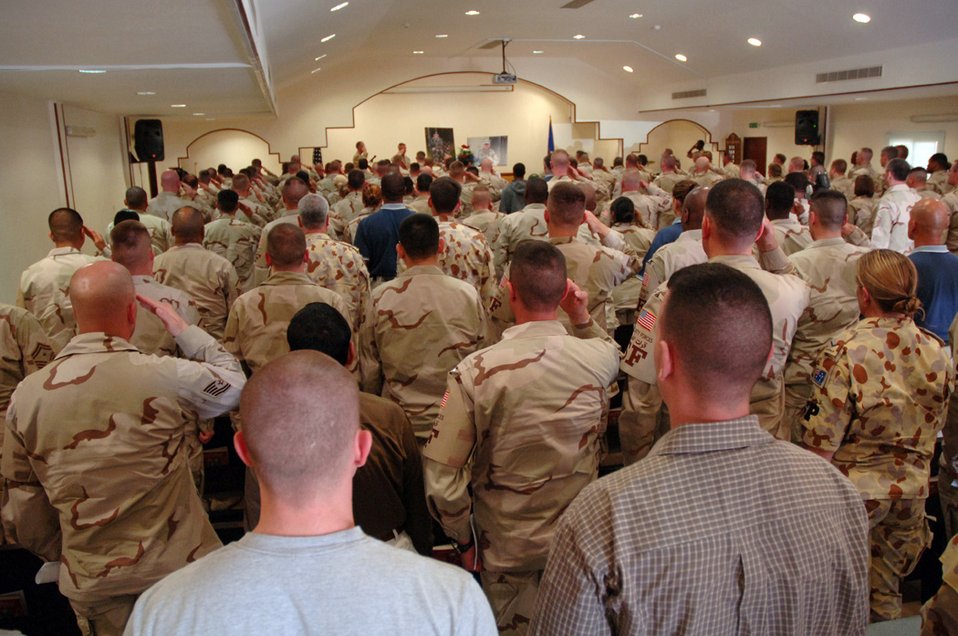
Final salute

SOUTHWEST ASIA (AFPN) -- Airmen with the 379th Air Expeditionary Wing mourn the loss of two Elmendorf Air Force Base, Alaska, security forces Airmen. Tech. Sgt. Jason L. Norton and Staff Sgt. Brian McElroy were killed in action in Southwest Asia. A ceremony was held to honor them Jan. 26 at a forward deployed location here.